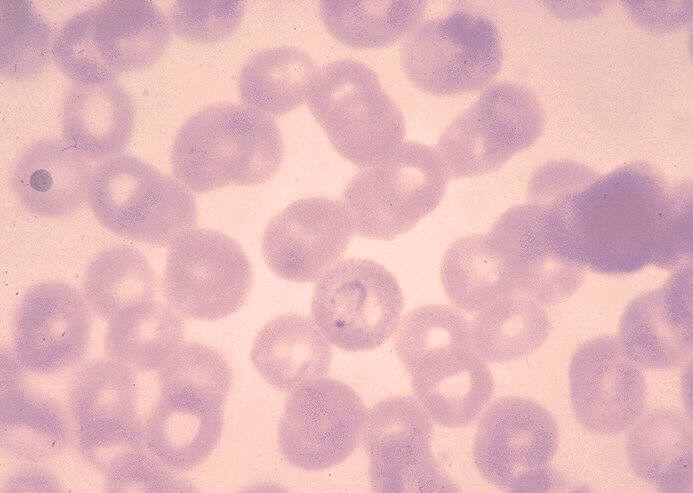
Plasmodium vivax ring form trophozoite in erythrocyte that shows basophilic stippling